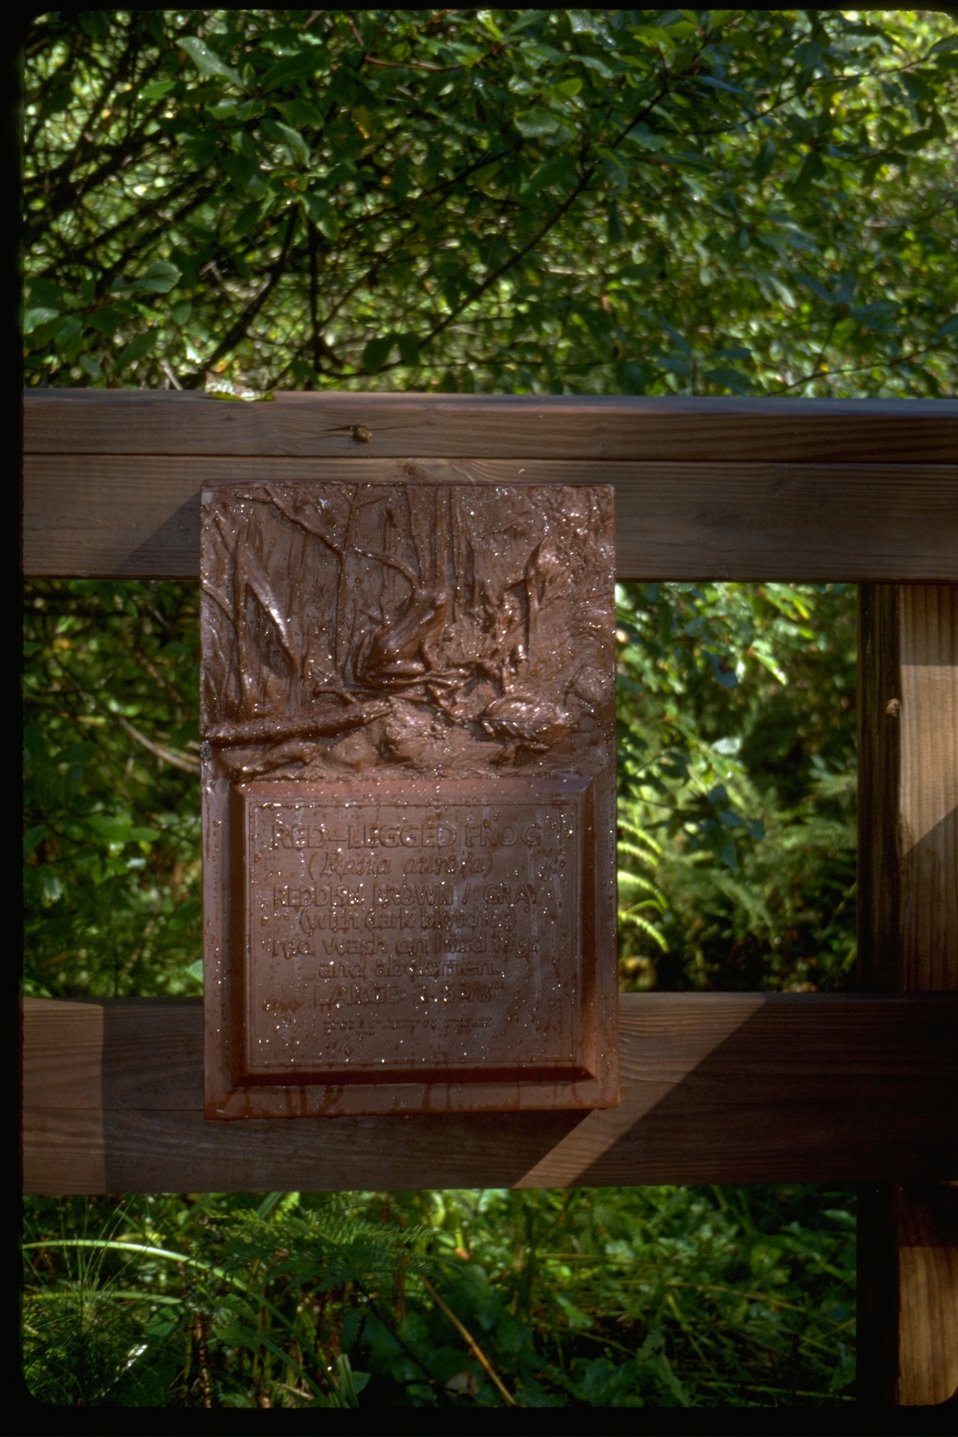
Interpretive panel: Backtrail Journals.